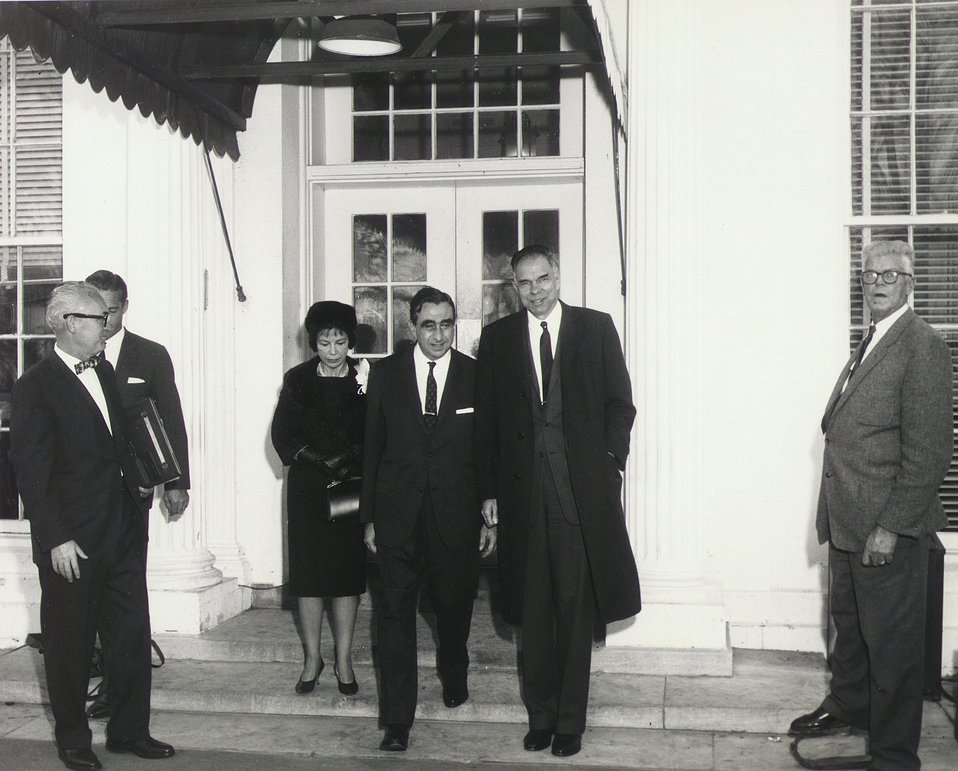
Fermi Award for Teller in 1962. Teller leaving the White House after recieving the award.